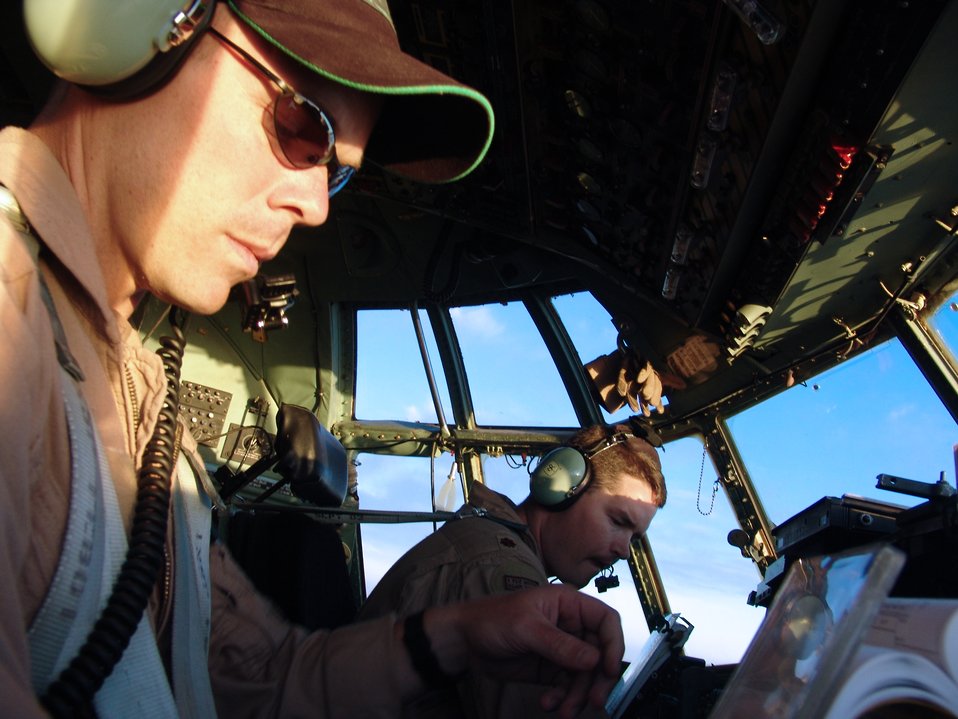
Hercules supply mission

SOUTHWEST ASIA -- Maj. Chip Brown (left) and Maj. Bryan Wood fly their C-130 Hercules to Kandahar Air Base, Afghanistan, to pick up pallets containing medical supplies, food and blankets. The pallets were airdropped to rural areas of Afghanistan where Soldiers distributed supplies to needy villagers in the local area. The Airmen are assigned to the 737th Expeditionary Airlift Squadron at a forward-deployed location and are from Pope Air Force Base, N.C.